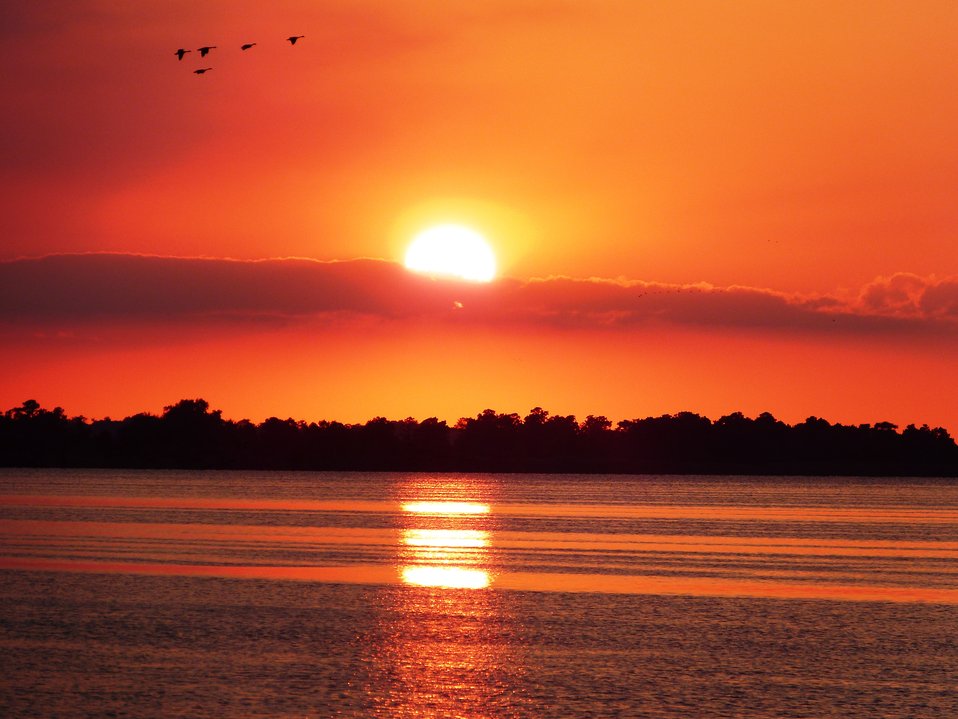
Sunset over Lake Mattamuskeet with ducks in the sky

The Refuge’s prime location along the Atlantic Flyway makes it a vitally important stopover for wintering waterfowl.